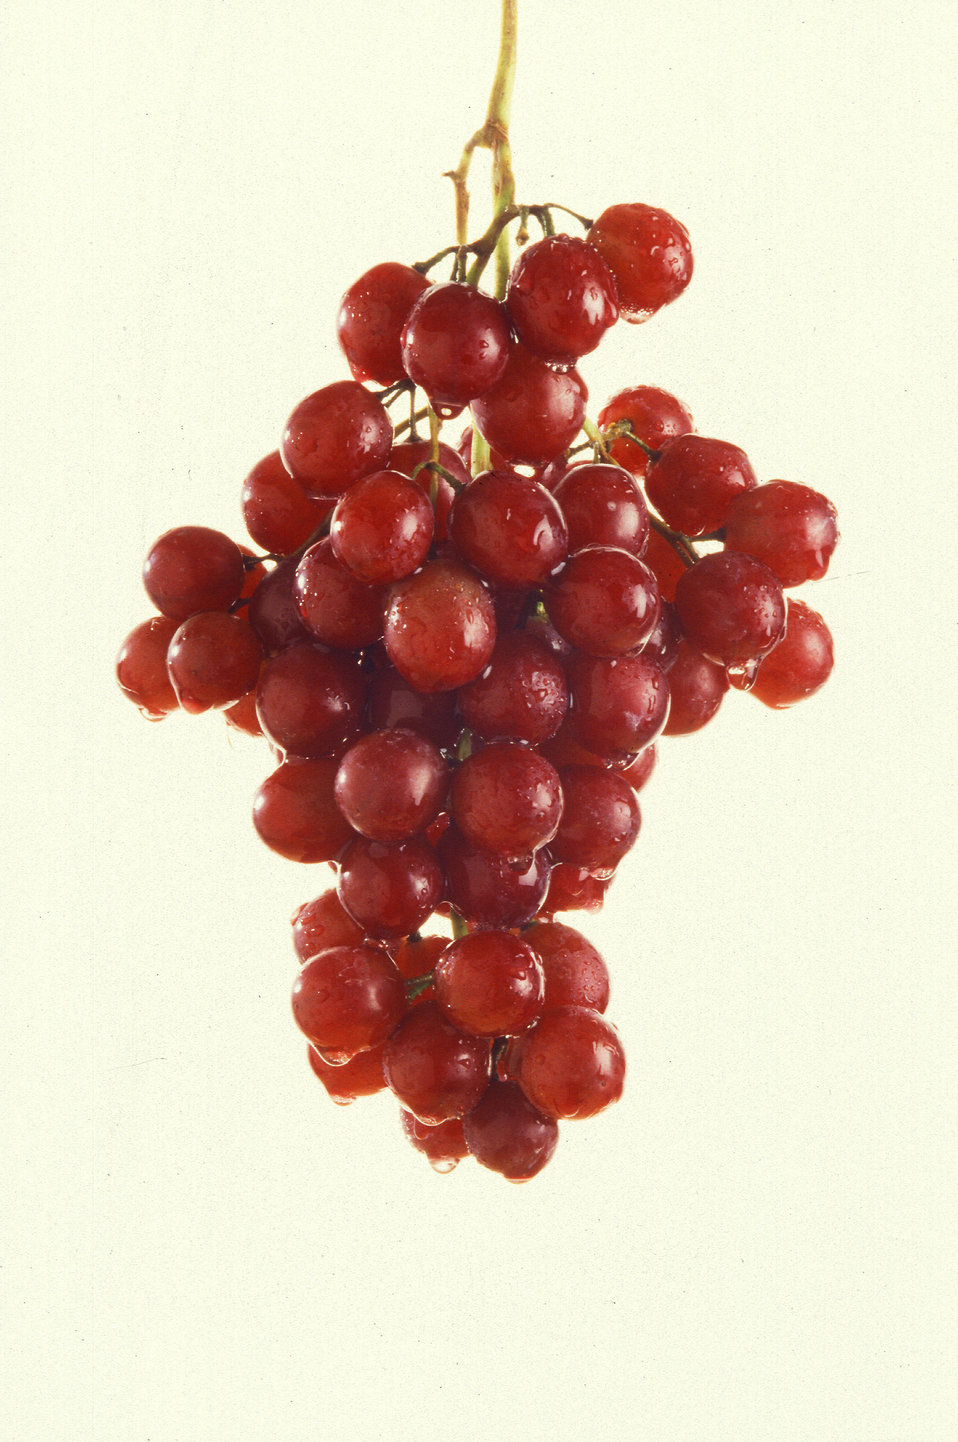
Sweet, juicy grapes, picked a the peak of ripeness, are one of nature's best-tasting treats. In vineyards, greenhouses, and laboratories U.S. Department of Agriculture (USDA) Agriculture Research Service (ARS) scientists seek to bring even better grapes to your shopping cart tomorrow. The USDA ARS laboratory that developed America's most popular red seedless grape, Flame Seedless, has also offered nurseries and breeders a delicious new black seedless grape. Called Black Emerald, the newcomer is a sweet grape with berries about the size of a dime. The flesh is translucent, firm, and almost crisp.